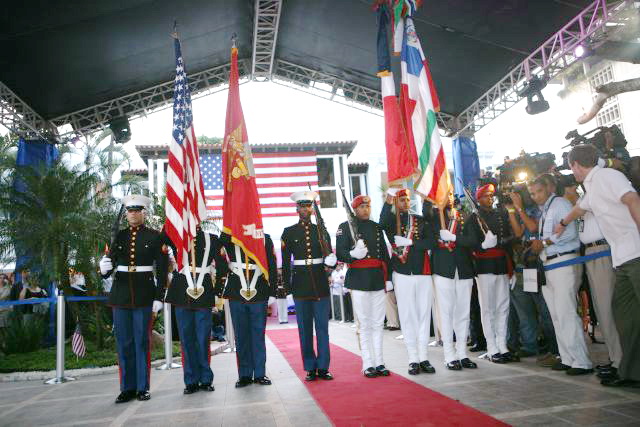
July 4th Celebration at U.S. Embassy in the Dominican Republic

The U.S. Marine Corps Honor Guard and Dominican Armed Forces Guard stand at attention at the U.S. Independence Day celebration at the U.S. Embassy Santa Domingo in Dominican Republic at the Chief of Mission's Residence on July 2, 2010.